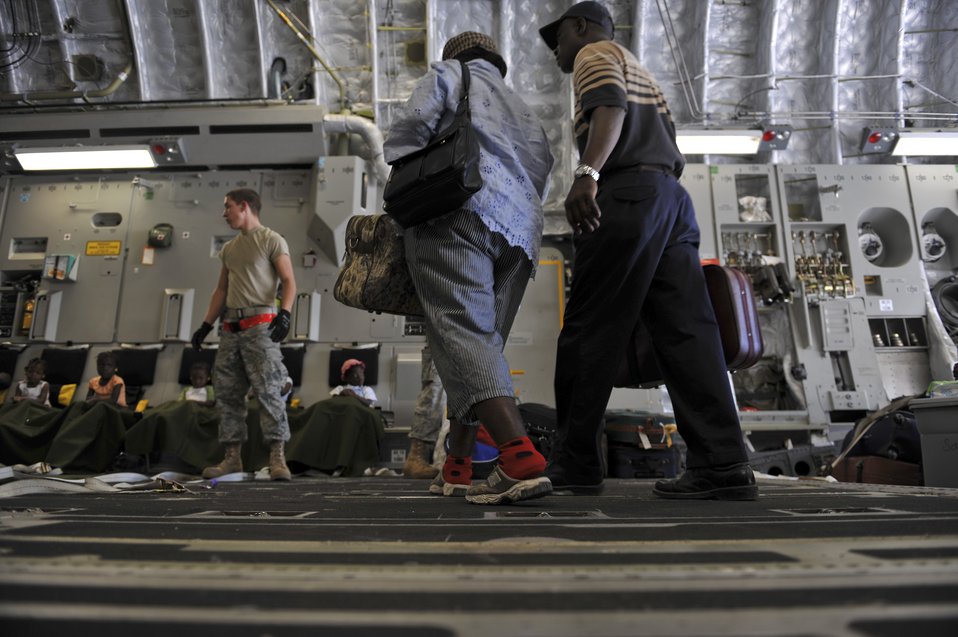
Evacuation

A couple board a C-17 Globemaster II at Toussaint L'Ouverture International Airport in Port-au-Prince, Haiti, Jan. 23, 2010. They were part of a group of nearly 200 Haitians evacuating the city. Aircraft from all over the world are flying into the airport to drop off humanitarian aid and transport people out of the country in the aftermath of the devastating earthquake Jan. 12.